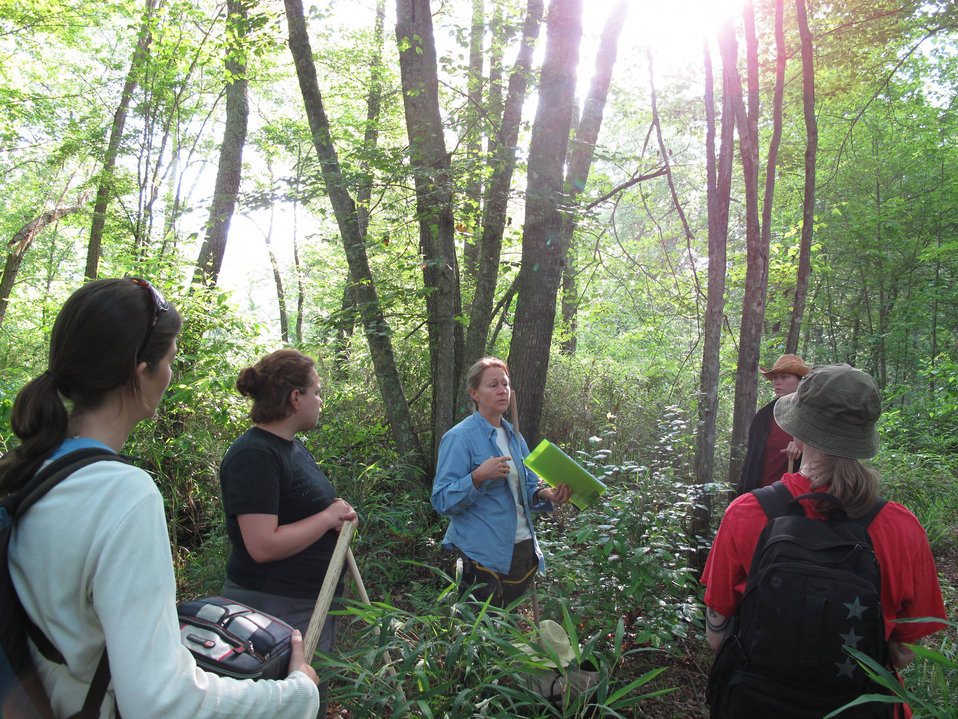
Bog turtle survey team discussing the turtles

Photo credit: USFWS/Gary Peeples

Climate change adaptation requires altering existing or developing new ways of assessing information, new management tools, and new professional skills. Natural resource agency professionals need accessible opportunities to learn about climate-related species, habitat, and ecosystem changes as well as how to identify the most promising strategies to conserve fish, wildlife, and plant populations and functioning ecosystems